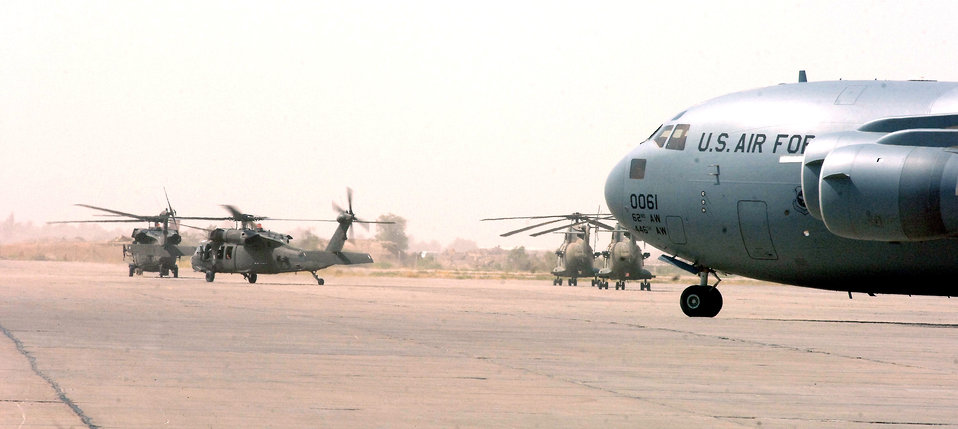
Ramp parking

A C-17 Globemaster III from McChord Air Force Base, Wash., sits on the ramp at Sather Air Base, Iraq, as two UH-60 Blackhwaks taxi to their parking spot near two Royal Air Force Puma helicopters July 10.